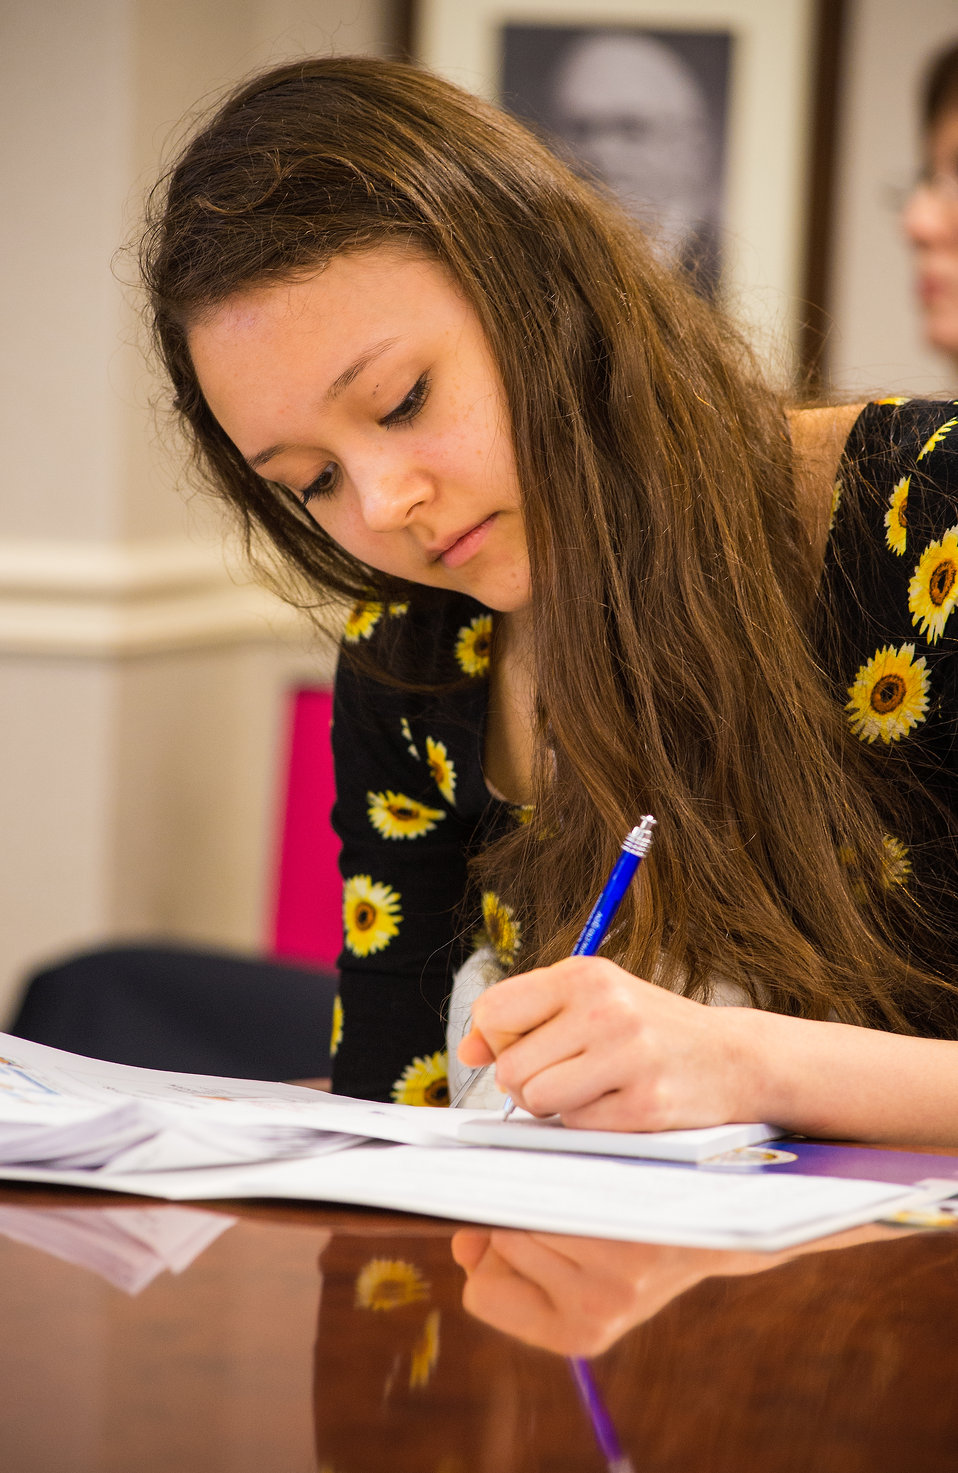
Nicola Kubzdela, a student from Thomas Jefferson High School of Science and Technology in Alexandria, VA. takes notes during the U.S. Department of Agriculture (USDA), Office of the Chief Information Officer (OCIO) IT Job Shadow Day, Tuesday, Mar. 25, 2014. The OCIO IT Job Shadow Day hosts students from local high schools in the Washington, D.C. area annually with IT professionals and agricultural specialists from a variety of mission areas at USDA.